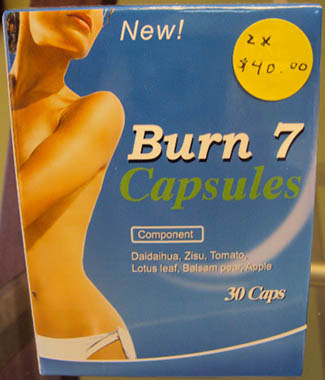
RECALLED – Dietary Supplement

December 23, 2013 – Product Recall – Deseo Rebajar Inc. Issues Voluntary Recall of Burn 7 Capsules Due to Undeclared Active Ingredient.